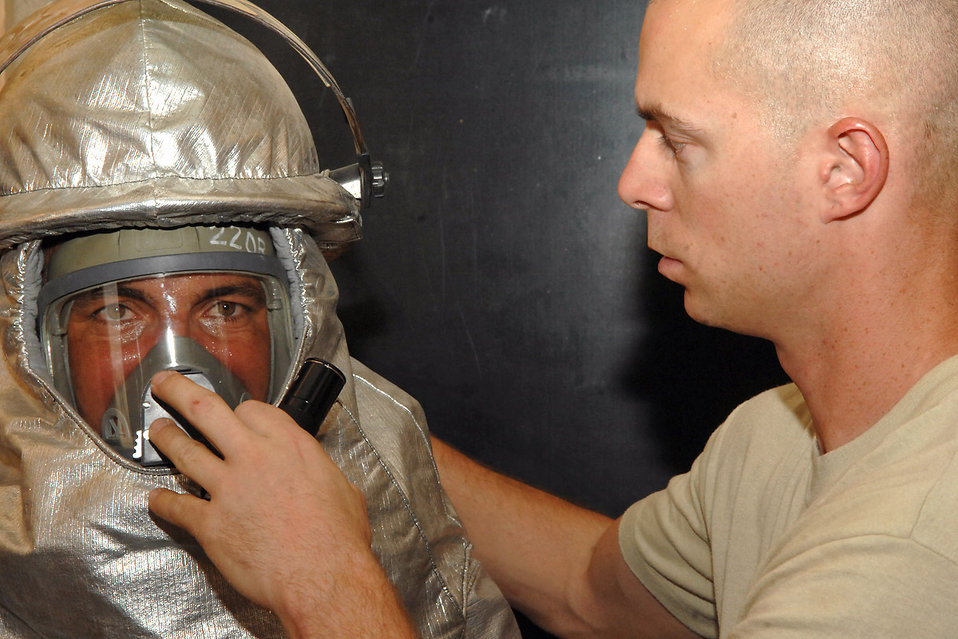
New training structure benefits Iraqi firefighters

Staff Sgt. Craig Cusenz ensures an Iraqi firefighter can breathe using a self contained breathing apparatus during combined American and Iraqi firefighter training July 30 at Kirkuk Regional Air Base, Iraq. Firefighters with the 506th Expeditionary Civil Engineer Squadron here facilitated the training to teach Iraqi firefighters how to rescue victims trapped inside a burning building. Sergeant Cusenz, a firefighter with the 506th ECES, is deployed from Tinker Air Force Base, Okla.